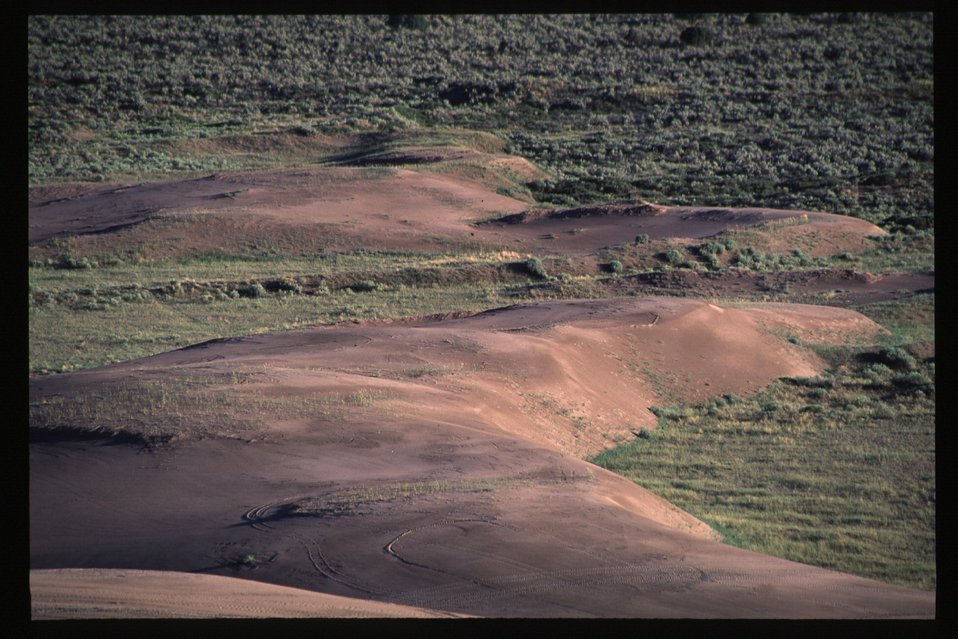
Recreation St Anthony Sand Dunes overview Idaho Falls Field Office USRD Upper Snake River District